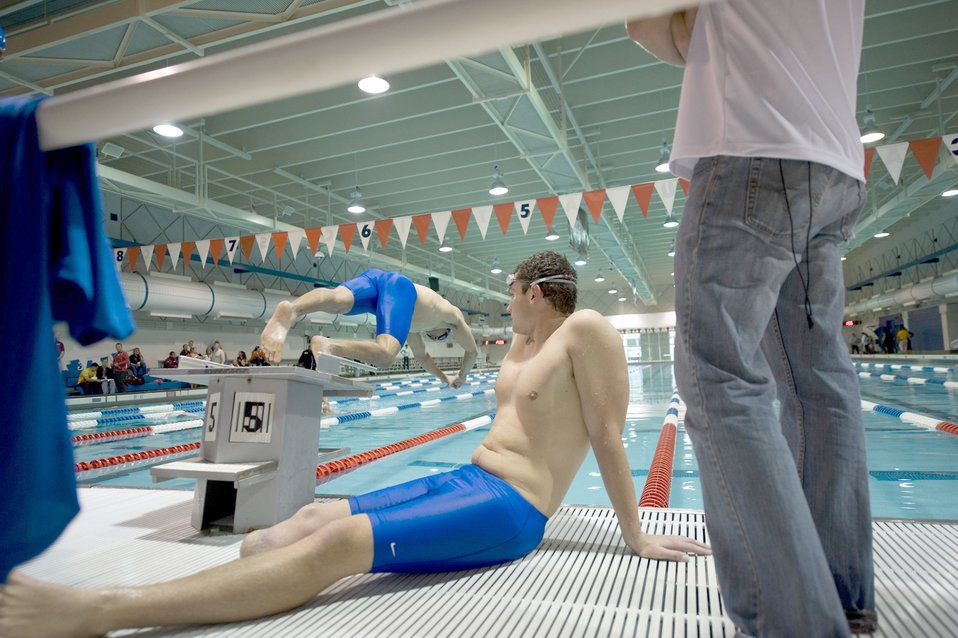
Warrior Games swim practice

Second Lt. Ryan McGuire watches as his teammate dives off the starting block during swim practice May 11, 2010, at the Olympic Training Center in Colorado Springs, Colo.